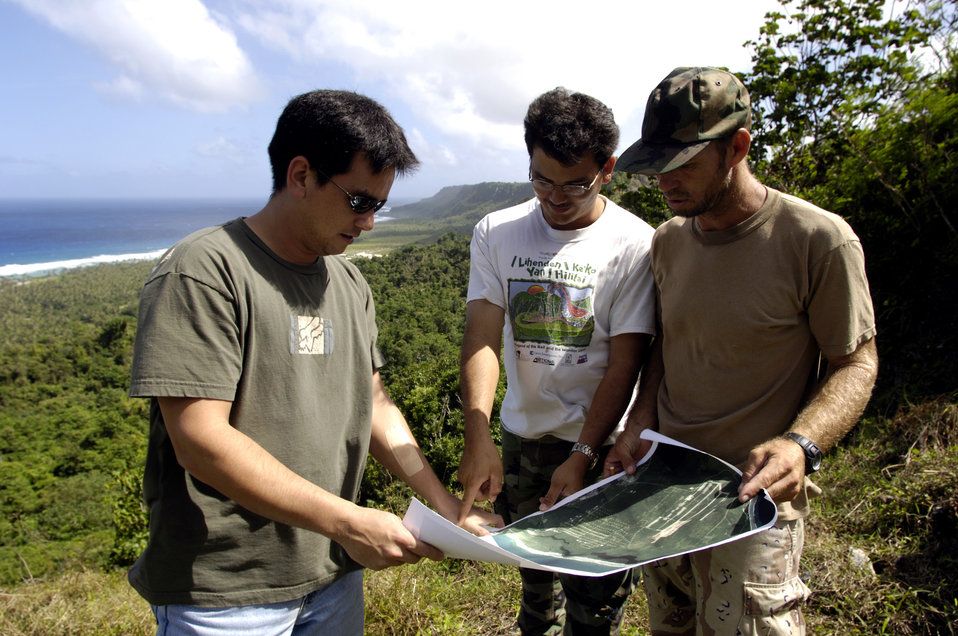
Saving endangered species

ANDERSEN AIR FORCE BASE, Guam (AFPN) -- Dana Lujan (left), Jeff Quitugua and Chris Jones (right) look over a map of Anderson Air Force Base. Mr. Lujan is the liaison for the Guam Department of Agriculture, which has a partnership with the base to re-introduce the Marianas crow back to the island. Mr. Lujan is the 36th Expedition Air Wing's chief conservation officer. Mr. Quitugua is a wildlife biologist and Mr. Jones is a wildlife technician from the Guam Department of Agriculture.